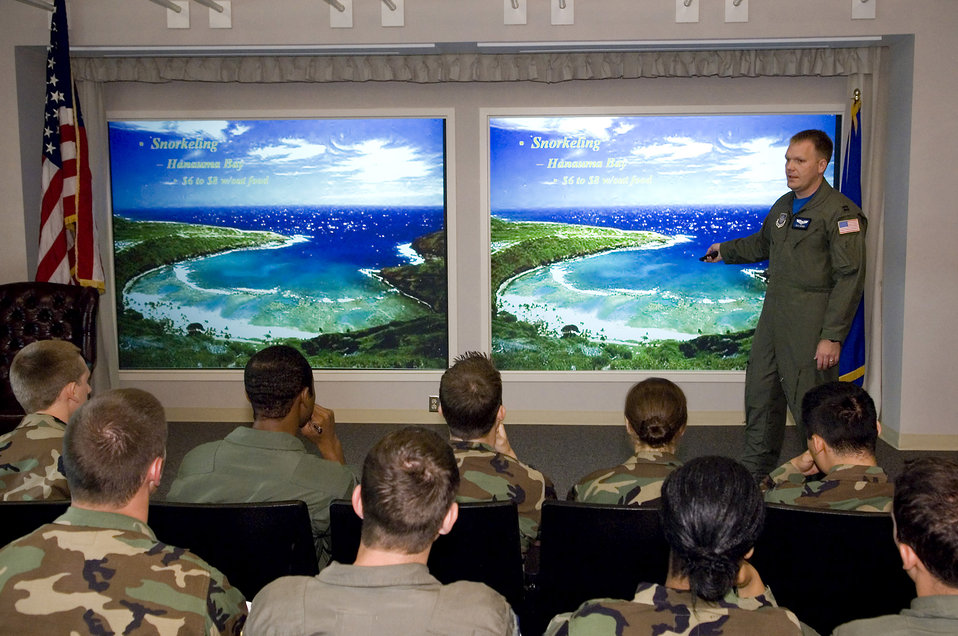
Cadets learn mission through Operation Air Force

Capt. Dale Moree briefs cadets June 13 on the mission at McChord Air Force Base, Wash. The U.S. Air Force Academy cadets are visiting McChord AFB as part of Operation Air Force, a career-broadening program. Captain Moree is assigned to the 7th Airlift Squadron.